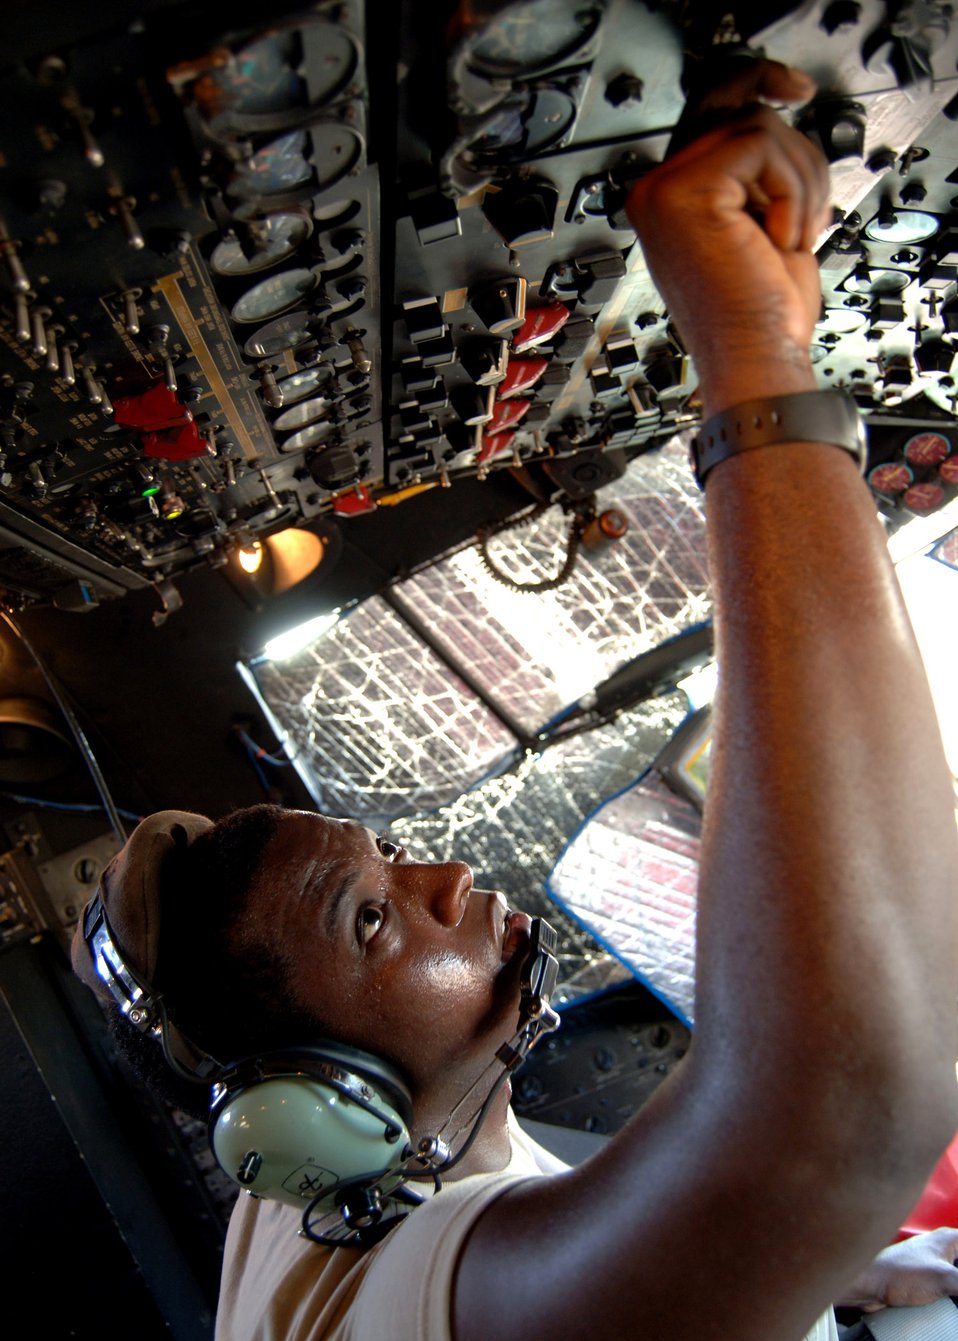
Preflight inspection

Staff Sgt. Freddie Bryant conducts a preflight inspection on a C-130 Hercules Oct. 22 at Camp Lemonier, Djibouti. Sergeant Bryant is a crew chief for the 81st Expeditionary Rescue Squadron.